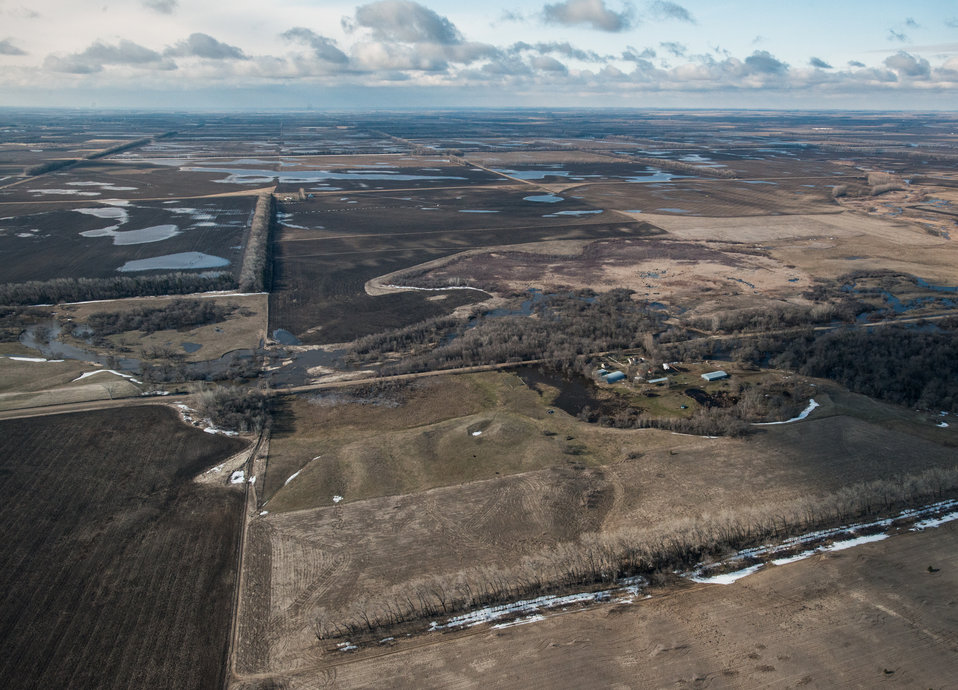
Proposed Dam site #10, on Turtle River Watershed in Grand Forks County, ND, part of the Red River basin, on Wednesday, May 1, 2013. To learn about the Red River Basin Initiative, see www.mn.nrcs.usda.gov/news/features13/RRBI.html.